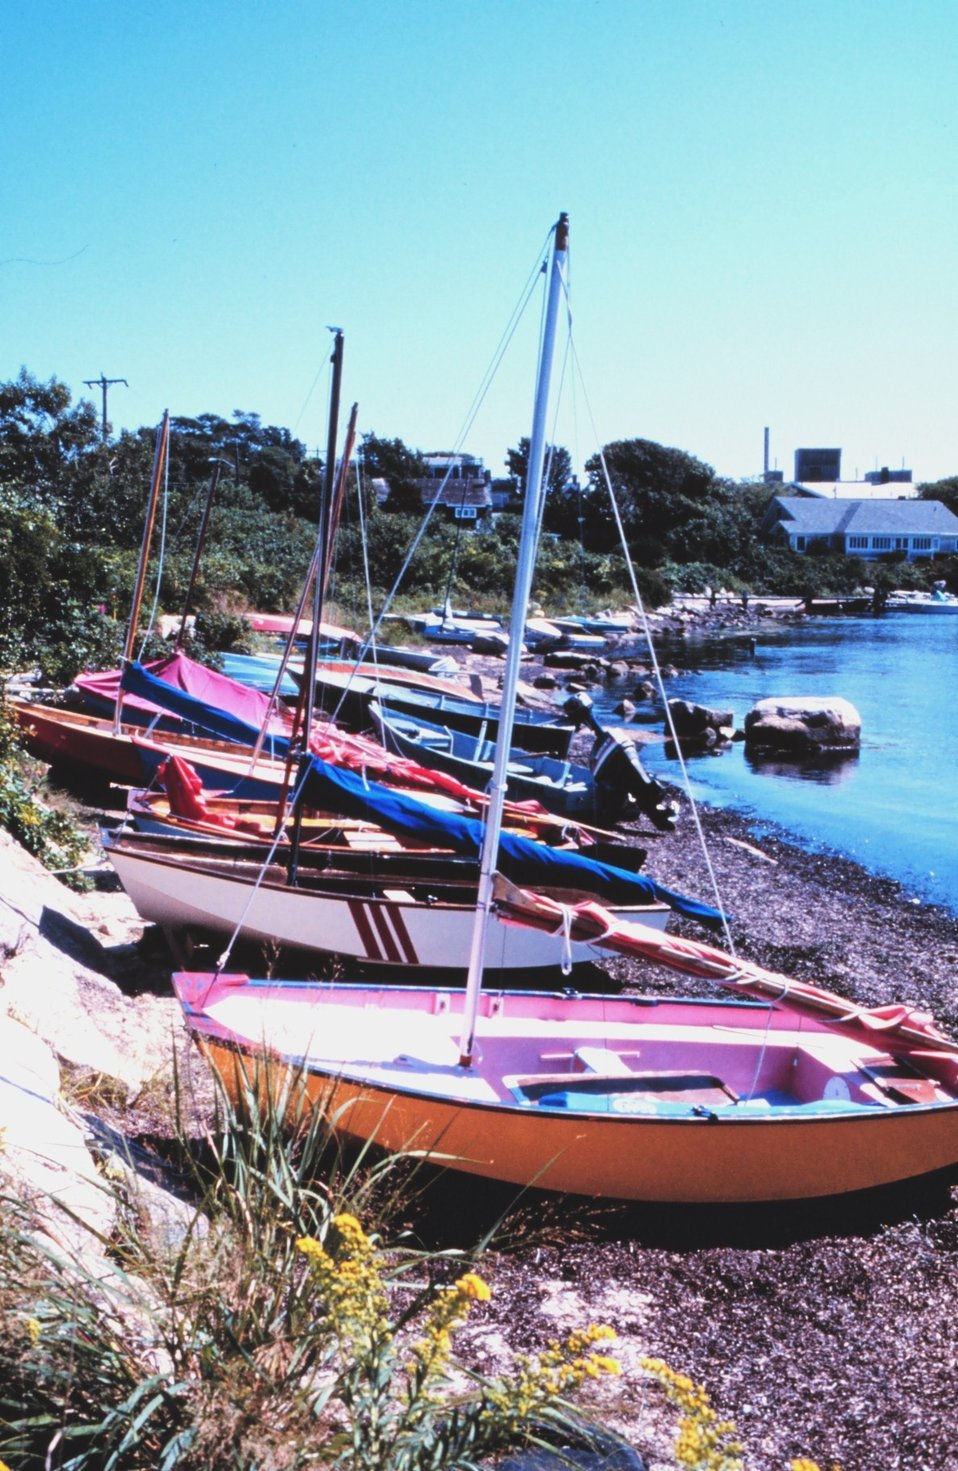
Woods Hole Yacht Club, Great Harbor at Woods Hole